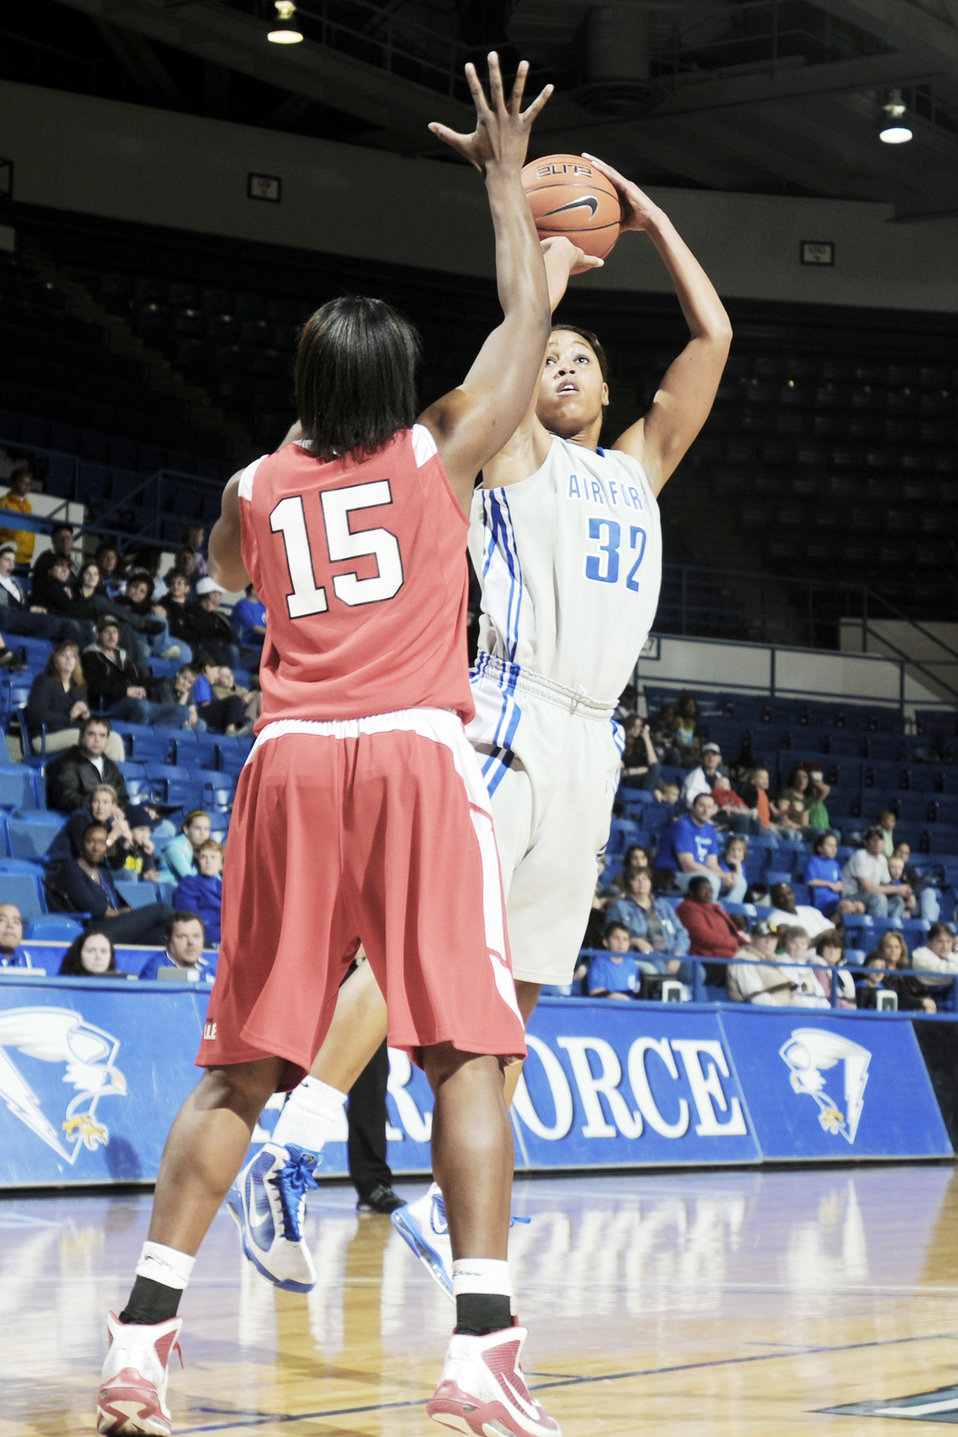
Women's basketball: Bradley University runs past Air Force

Academy freshman forward Dymond James takes a jumpshot as opponent Sonya Harris tries to block during the Falcons game against Bradley University at the Academy's Clune Arena Dec. 19, 2009. Air Force lost the game 62-45.